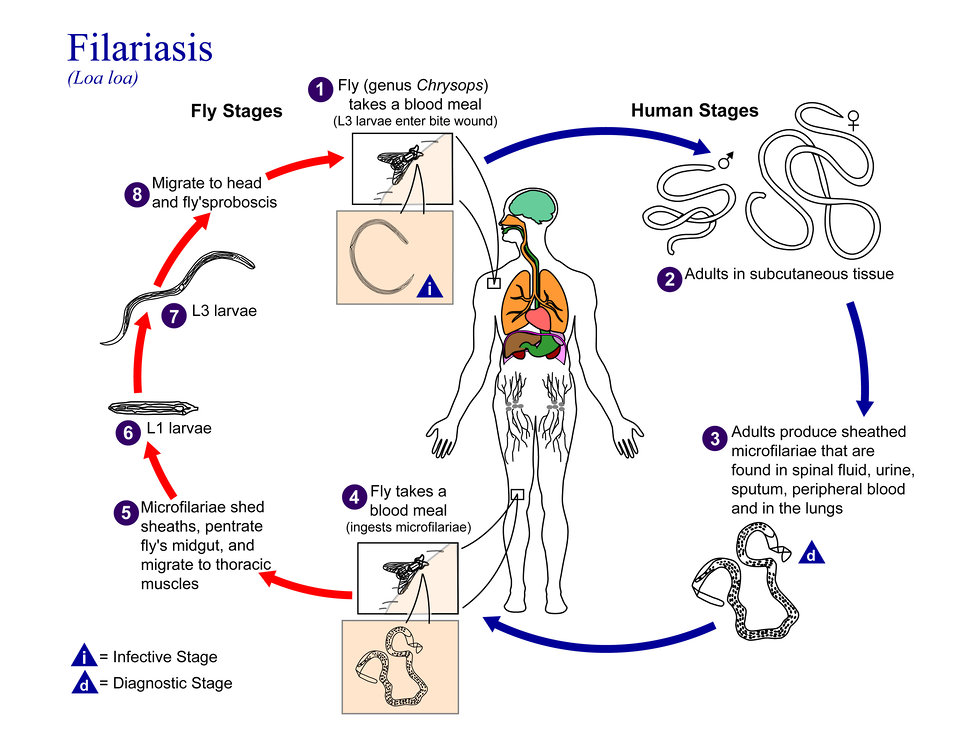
This is an illustration of the life cycle of Loa loa, one of the causal agents of Filariasis.